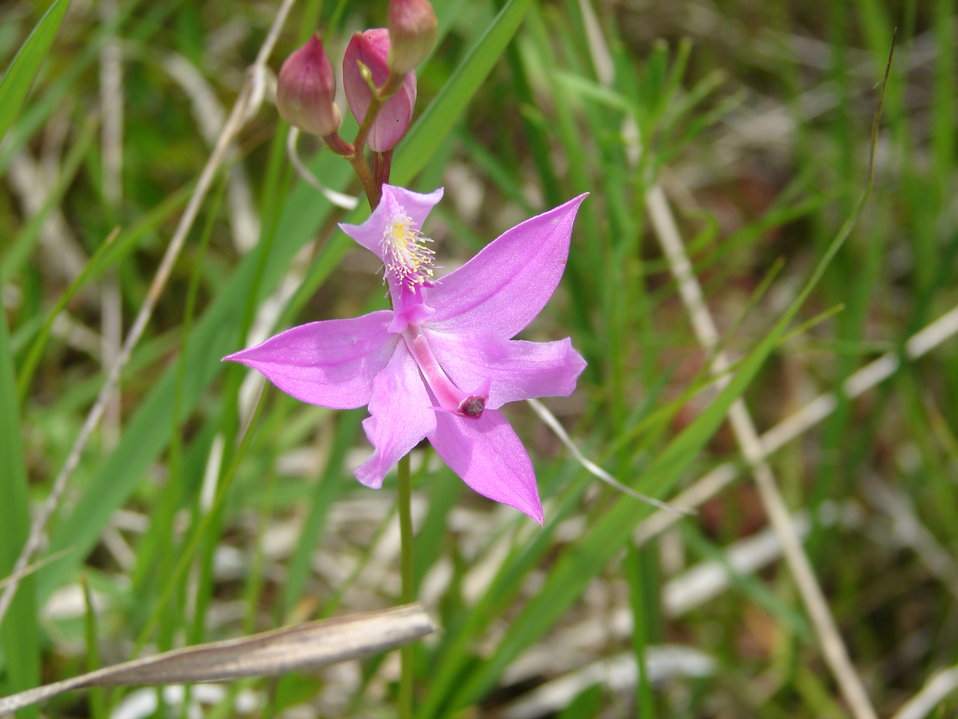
Necedah Grass Pink

A native wildflower grows in the prairie at Necedah National Wildlife Refuge in Wisconsin.